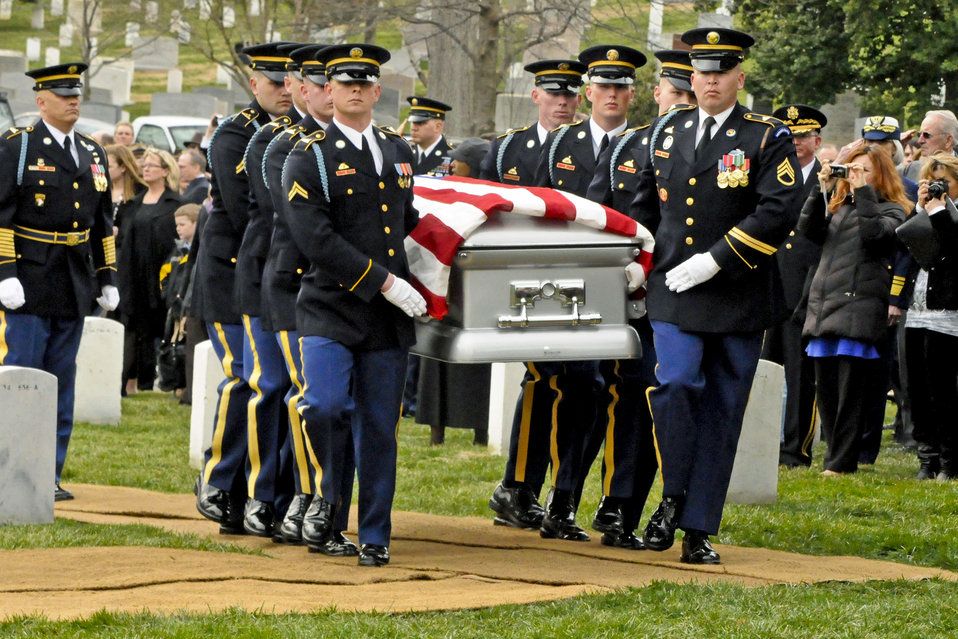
Doughboy’s burial marks end of era

Soldiers with the Army’s 3rd Infantry Regiment, “The Old Guard,” carry the casket of Army Cpl. Frank Woodruff Buckles, the last American World War I veteran, for his funeral ceremony March 15, 2011, at Arlington National Cemetery, in Arlington, Va.